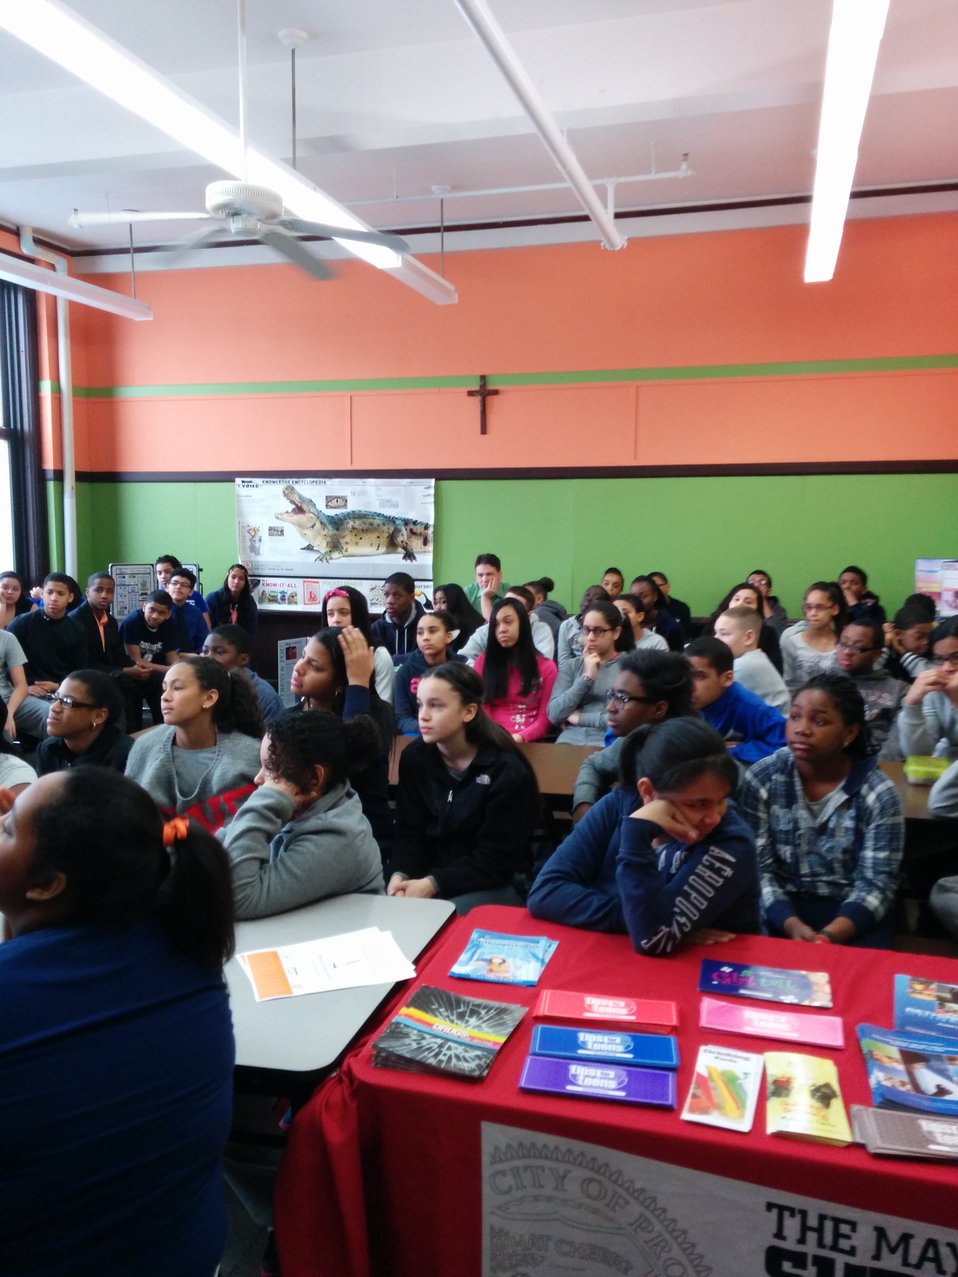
NDFW in RI

100 students participated in the Substance Abuse Prevention Presentations at Highlander Charter School (HCS) and Bishop McVinney Middle School (BMMS) on January 31st, 2014 during National Drug Facts Week.